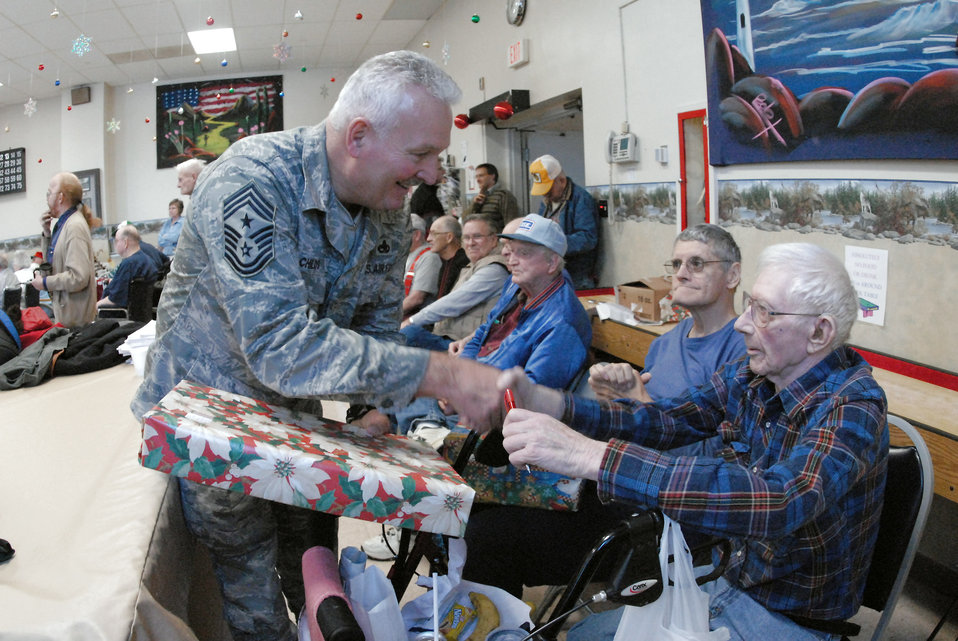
Airmen deliver Christmas

Chief Master Sgt. Brad Childs gives a Christmas gift to Army Korean War veteran Ervin Barfuss at the North Dakota Veteran's Nursing Home Dec. 10 in Lisbon, N.D. The gifts are given to veterans at the nursing home by the North Dakota Air and Army National Guard each December using funds raised through personal donations given by the North Dakota National Guard members. Chief Childs is the the 119th Wing command chief.